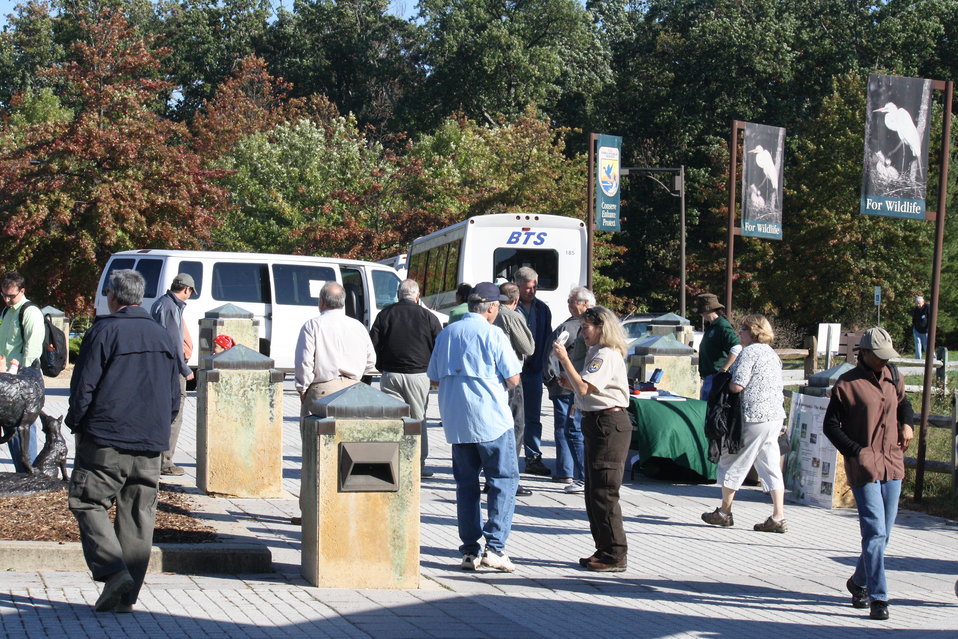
Patuxent Research Refuge 75th Anniversary

The public attends Patuxents annual Wildlife Festival.